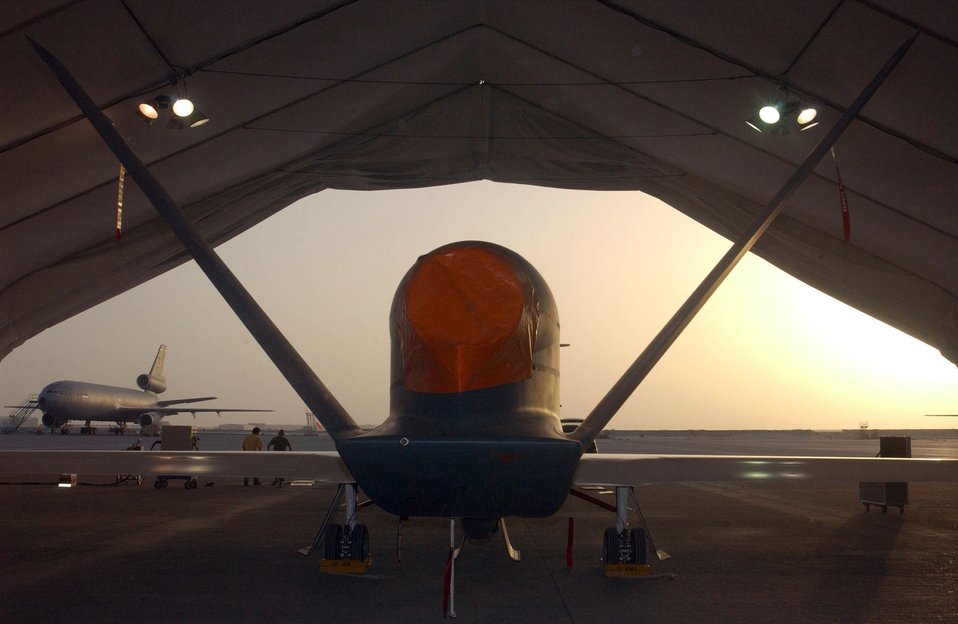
Global Hawk arrives in Southwest Asia

SOUTHWEST ASIA (AFPN) -- A Global Hawk rests in its hangar on the flightline of this desert base. The unmanned aerial vehicle is the Air Force's first deployed production Global Hawk, and is one of two deployed here. It is the first deployment of the UAV production models. Previous Global Hawks were prototypes or test models.